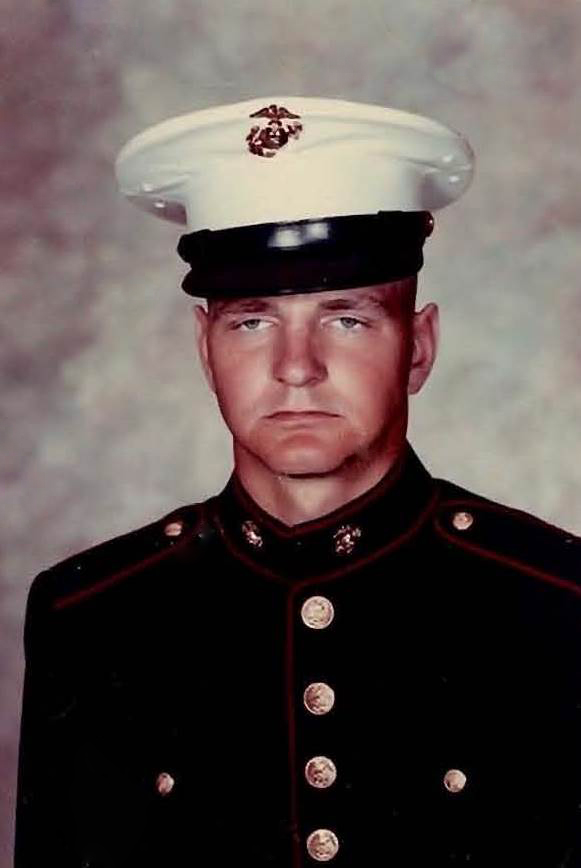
David Kitts, at the Pocosin Lakes National Wildlife Refuge in North Carolina, served in the U. S. Marine Corps from 1970 to 1974 was a Sergeant E-5 when he got out. He served in Vietnam just before the end of the war.